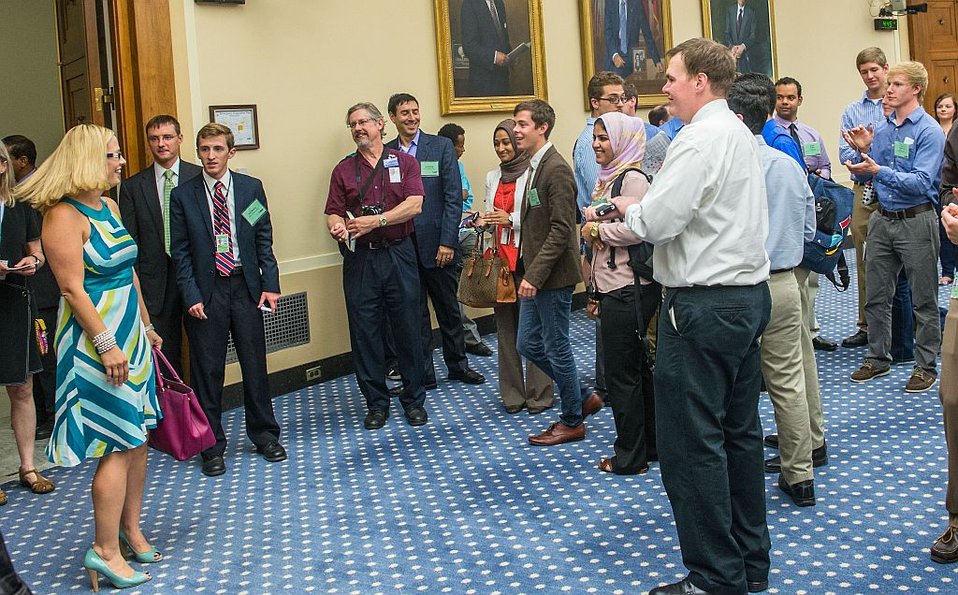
Congresswoman Krysten Sinema and SURF students

Congresswoman Krysten Sinema, Dem. Arizona, (left) arrives at the House Science Committee Hearing Room to meet with NIST Student Undergraduate Research Fellows.